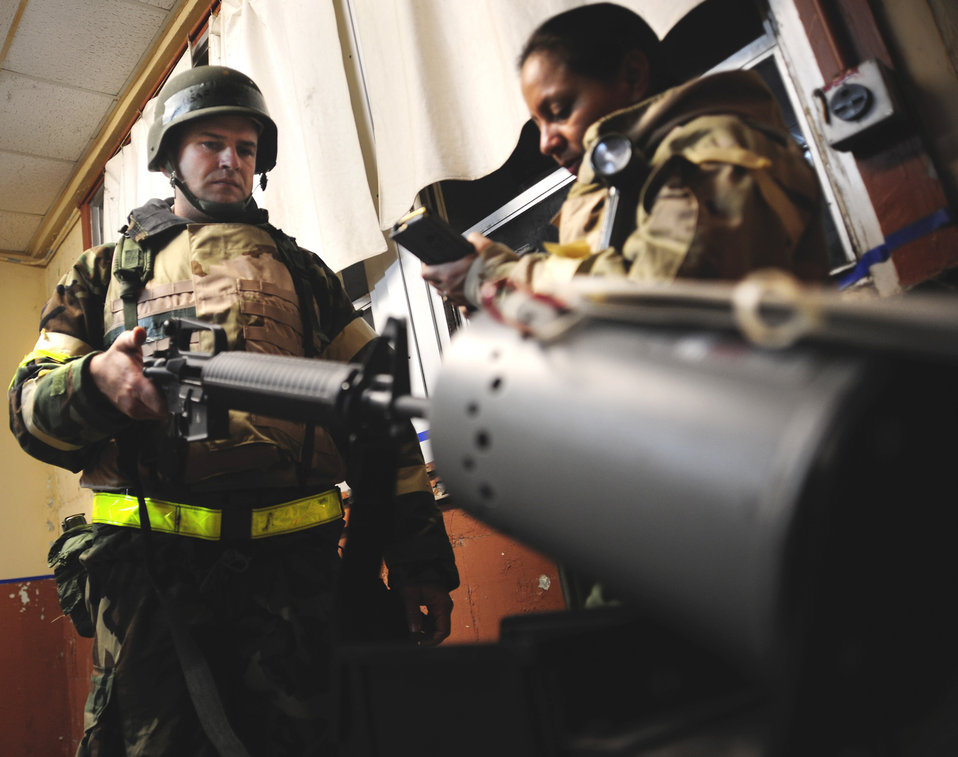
Preparing for battle

Senior Airman Eivette Icaza assists Master Sgt. Williams Smoot in loading his M-16 rifle Jan. 26, 2011, at Savannah Combat Readiness Training Center in Savannah, Ga. Airman Icaza is assigned to the 112th Logistics Readiness Squadron. Sergeant Smoot is assigned to the 112th Aircraft Maintenance Squadron.